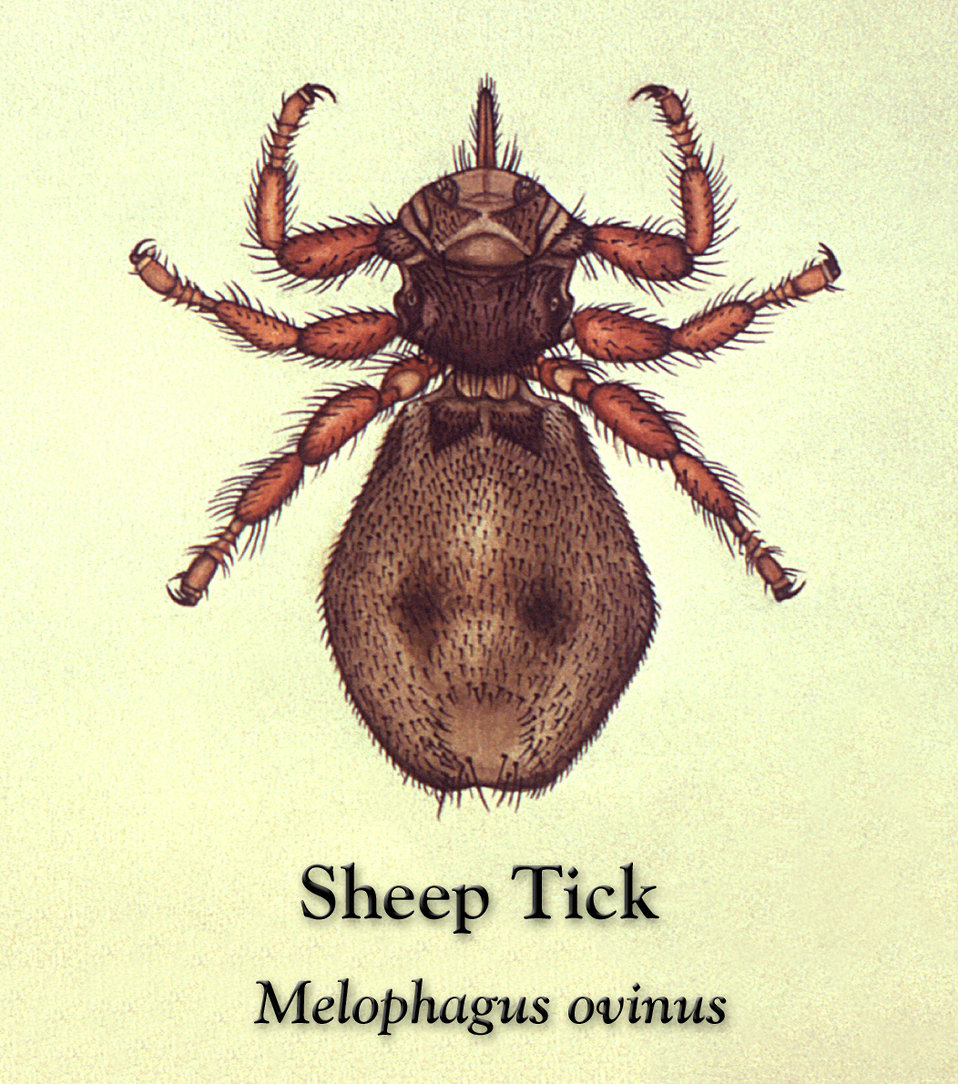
This is a dorsal view of the 'Sheep tick', Melophagus ovinus, also call a 'ked', which is not a tick at all, but a fly.